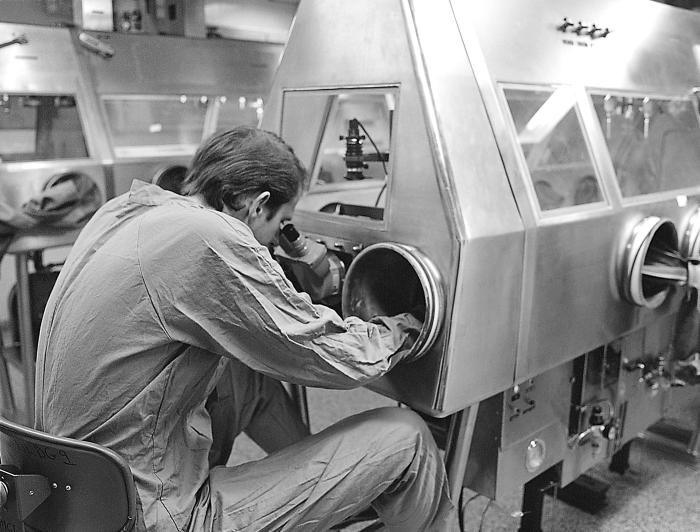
This 1978 photograph depicted Dr. Russell Regnery as he was seated in a CDC Maximum Containment 'Cabinet Lab'. His hands are shown inserted into the cabinet, though protected inside its portals by airtight gloves.